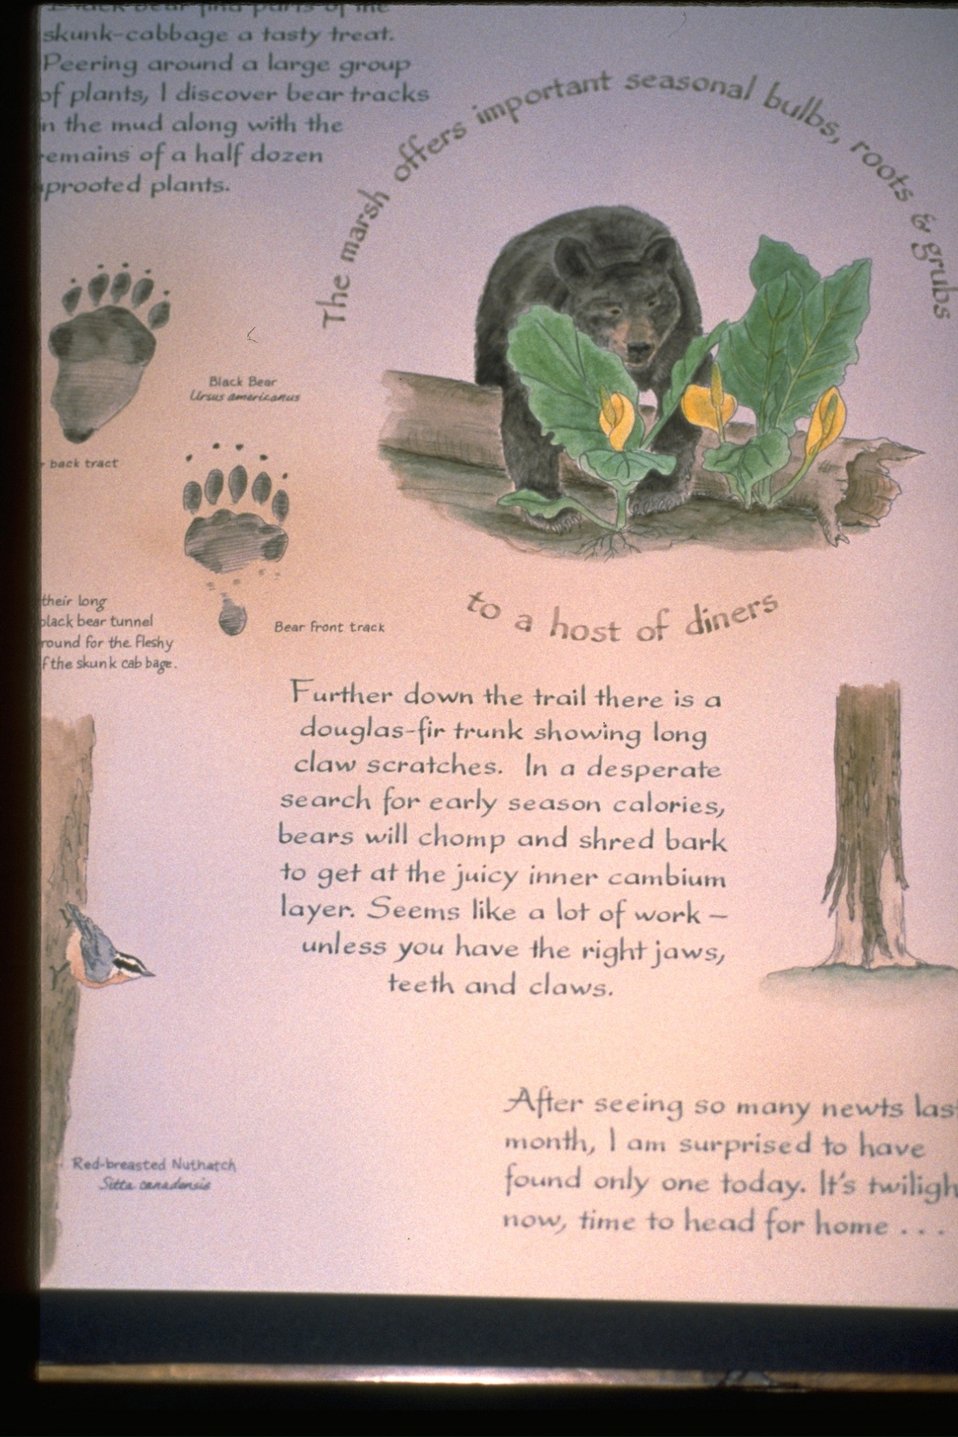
Interpretive Panels: Boardwalk Trail Journals.